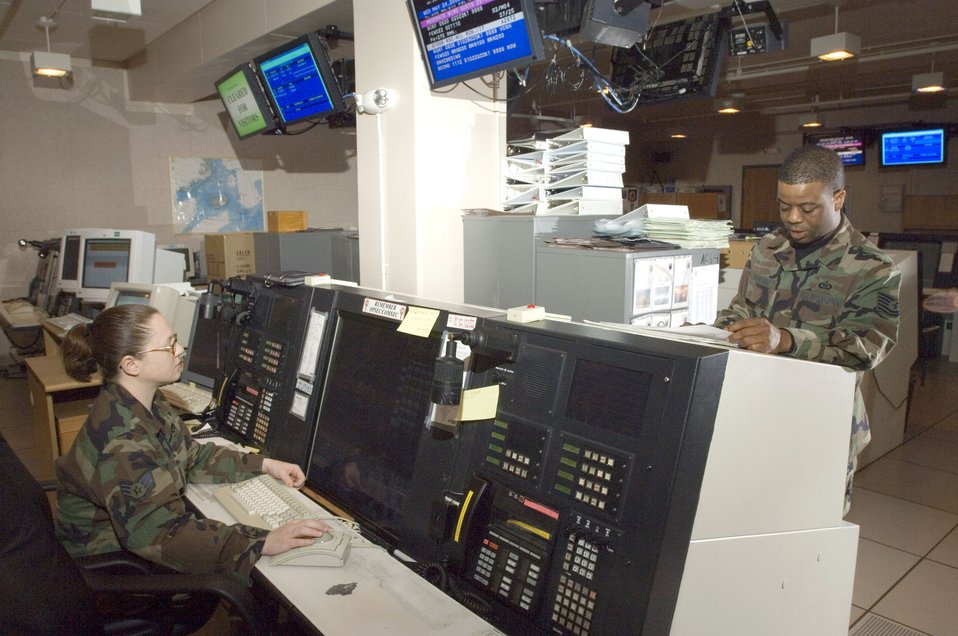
Iceland radar mission comes to close

Tech. Sgt. Khalifah Woodard and Staff Sgt. April Jepsen run through an operations check on a radar operator console unit at Naval Air Station Keflavik, Iceland, May 24. Sergeant Woodard is a mission crew commander technician and Sergeant Jepsen is a weapons control technician with Keflavik's 932nd Air Control Squadron.